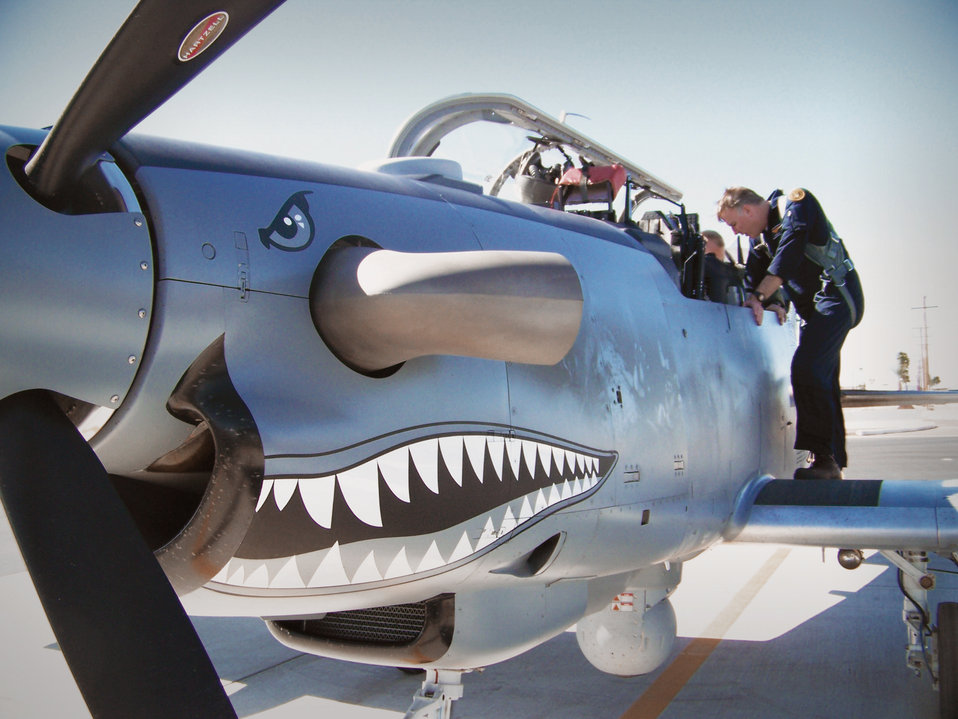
Quite a ride!

Dan Hinson (standing), a Hawker-Beechcraft Corporation test pilot, talks with Maj. Evans Boeve as he straps into the cockpit for a test flight in an AT-6 Texan II, April 15, 2011, at Barry M. Goldwater Air Force Range, Ariz. Major Boeve is a sensor program manager at the Air National Guard/Air Force Reserve Center Test Center.